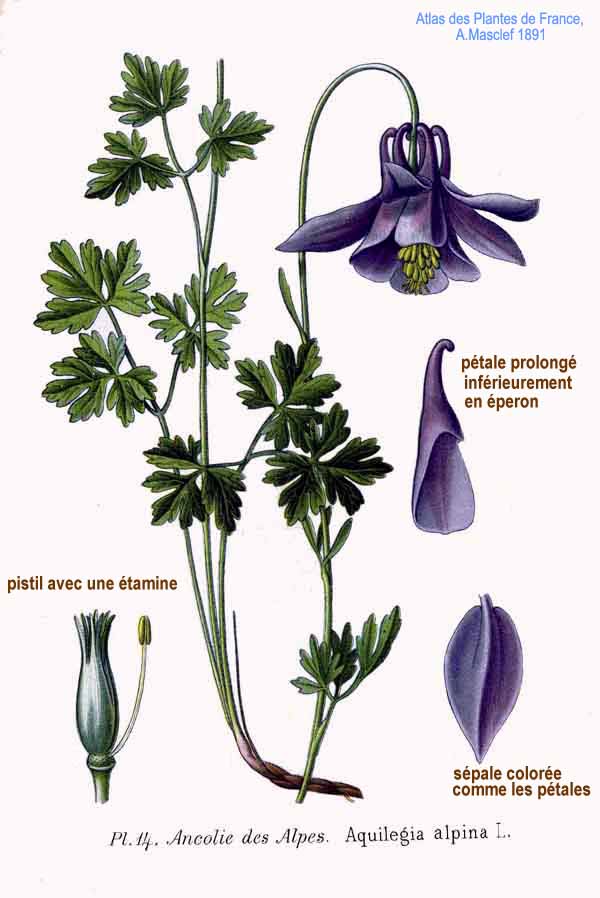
14 Aquilegia alpina L